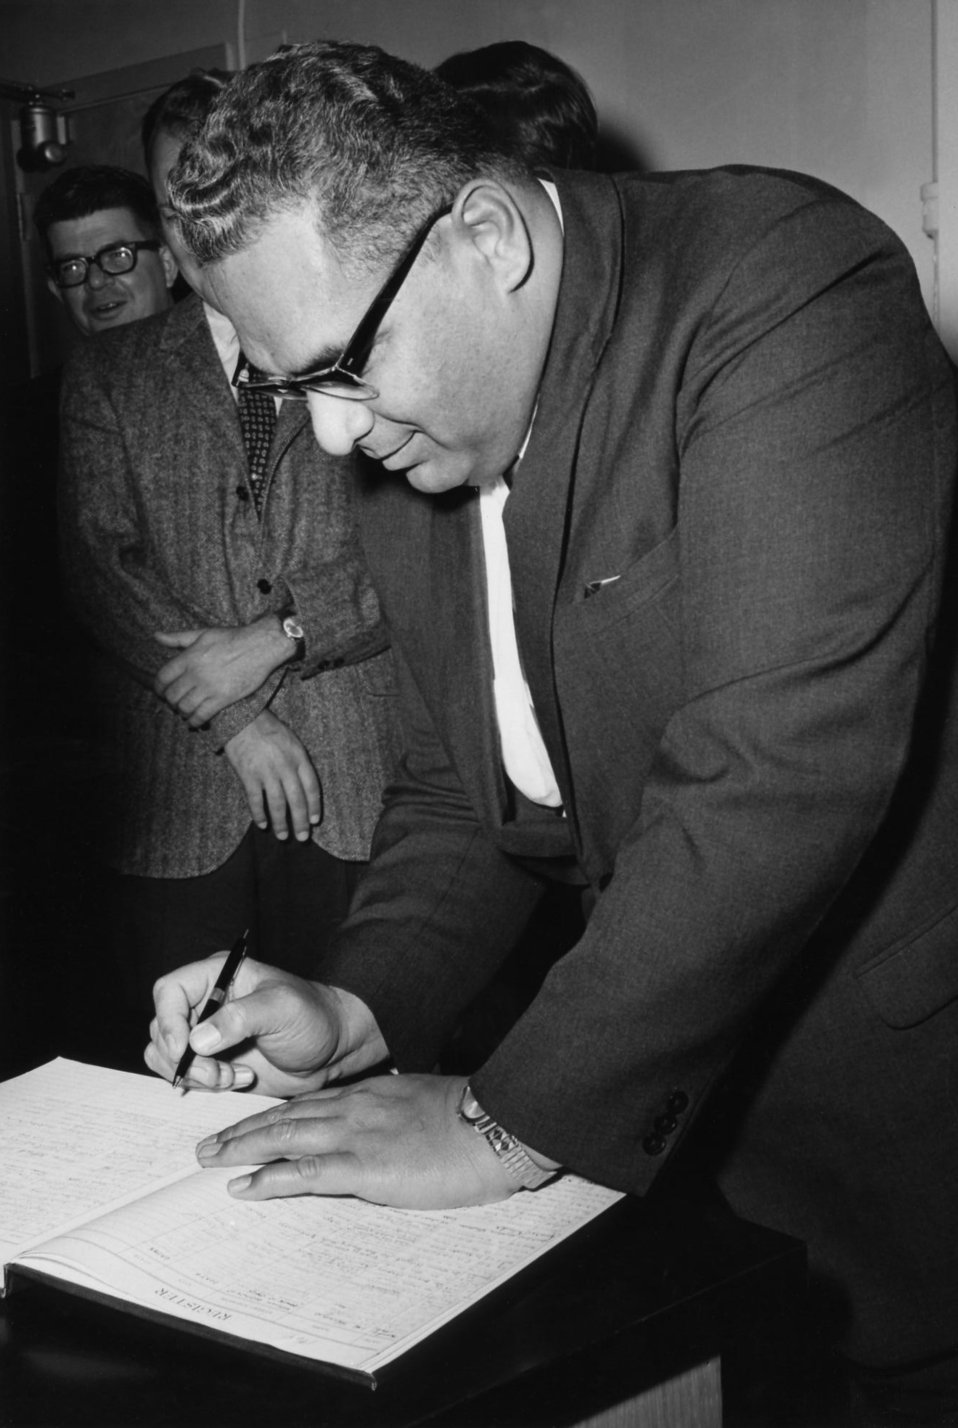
This photograph shows the Prince of Tonga, Prince Tu'ipelehake, as he was signing the guest registry during his 1967 visit to the Centers for Disease Control. Also in attendance was former Assistant Surgeon General, J. Donald Millar, M.D., M.P.H. (far left background). Dr. Millar also held the positions of Director of the National Institute for Occupational Safety and Health (NIOSH), for an unprecedented two terms from 1981-1993, and was the Director of the National Center for Environmental Health.